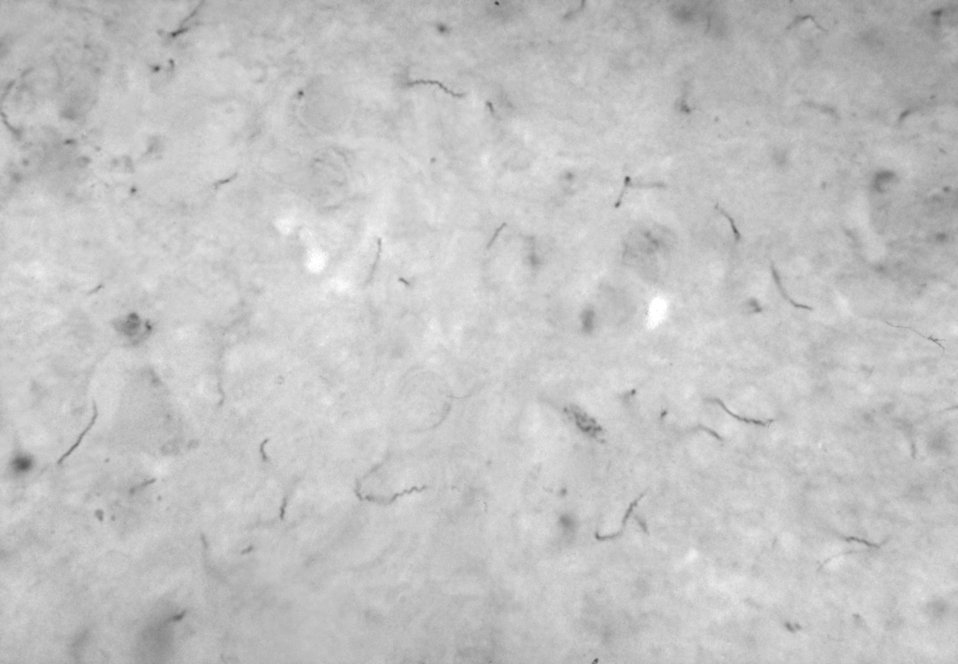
A photomicrograph of treponema pallidum bacteria.